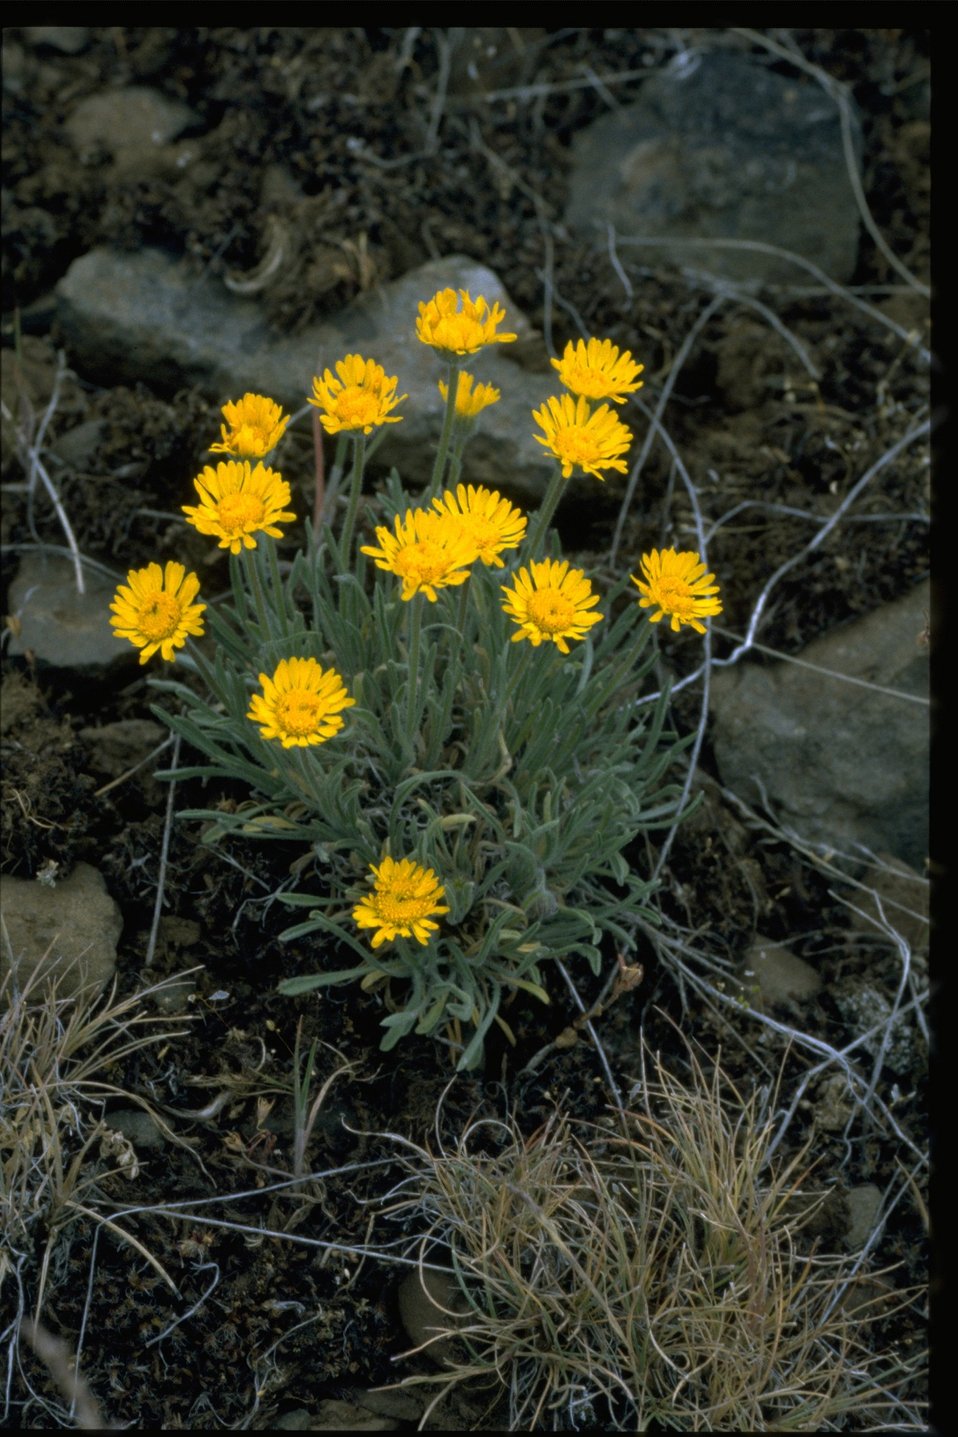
Farshot of dwarf yellow fleabane (Erigeron chrysopsidis).